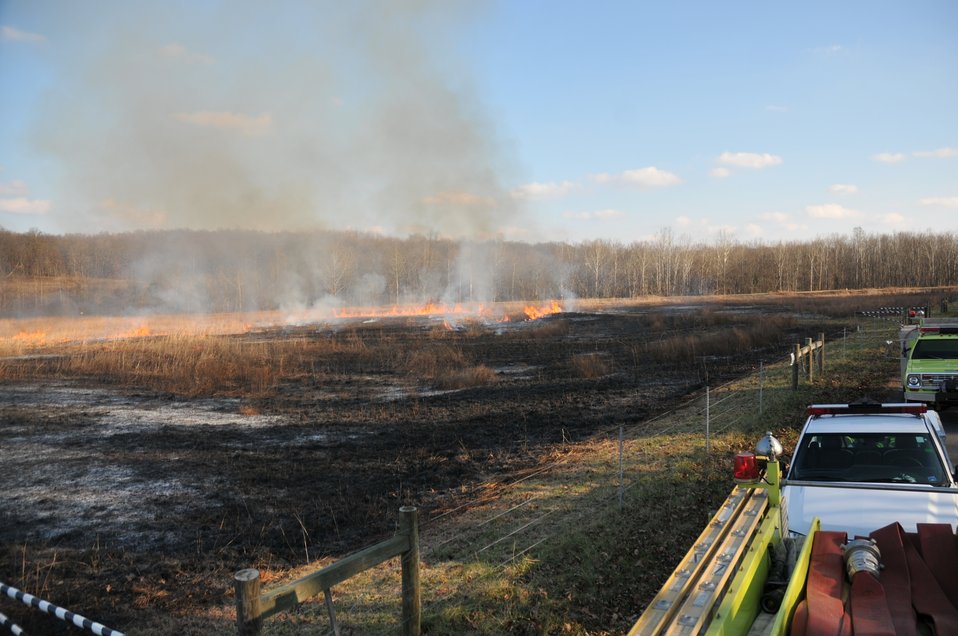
Successful controlled burn at Portsmouth

Firefighters keep watch as the controlled prairie burn is completed at the Portsmouth Site in mid-December 2011.
***
Portsmouth Gaseous Diffusion Plant firefighters recently completed a prescribed fire, or controlled burn, of an 18-acre prairie at the site, two weeks ahead of a regulatory deadline.
“Burning the prairie in a controlled manner stimulates the germination of prairie grasses and reduces the invasion of woody plants to maintain a healthy prairie ecosystem,” said DOE Site Director Vince Adams.
The prairie ecosystem was the result of remediation of former lime sludge lagoons that settled out waste lime from the plant’s water treatment plant.